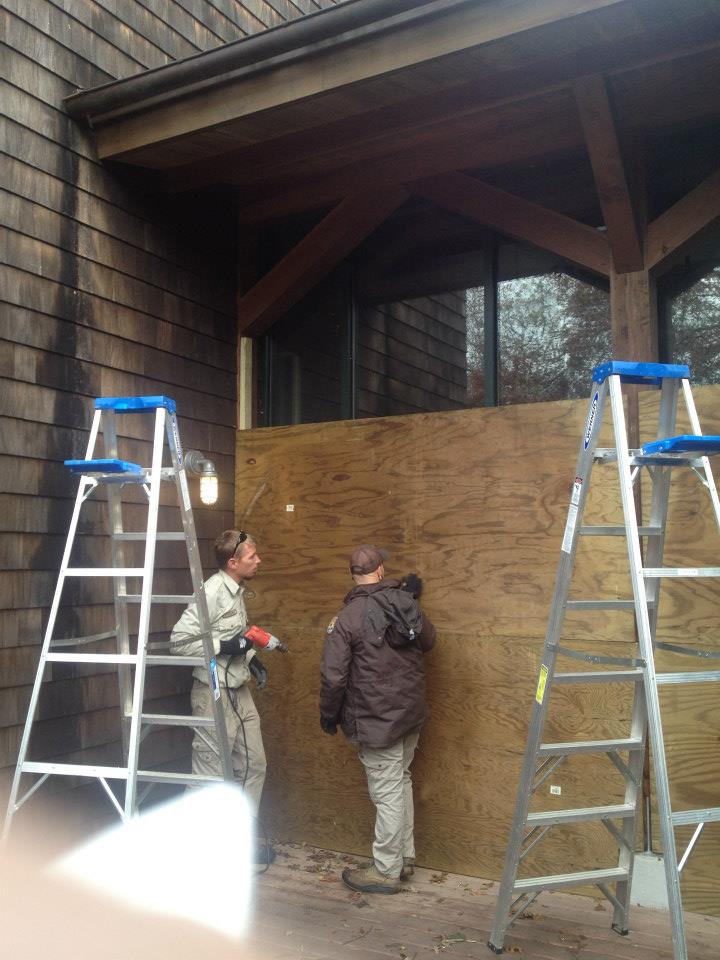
Preparations for Hurricane Sandy (RI)

Boarding up the Kettle Pond Visitor Center in preparation for Hurricane Sandy.